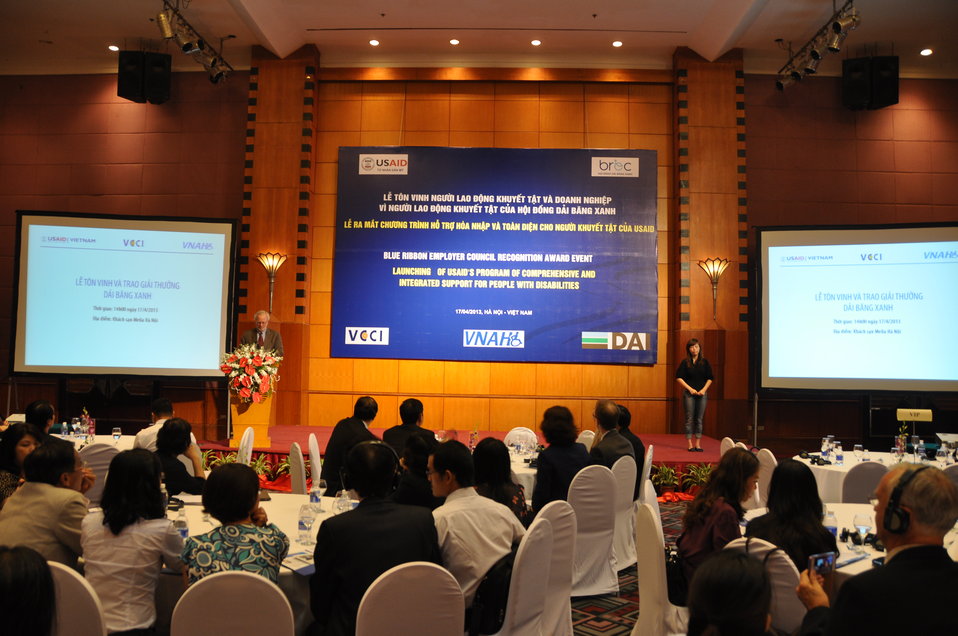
Blue Ribbon Employers Council Awards

Hanoi, April 17, 2013